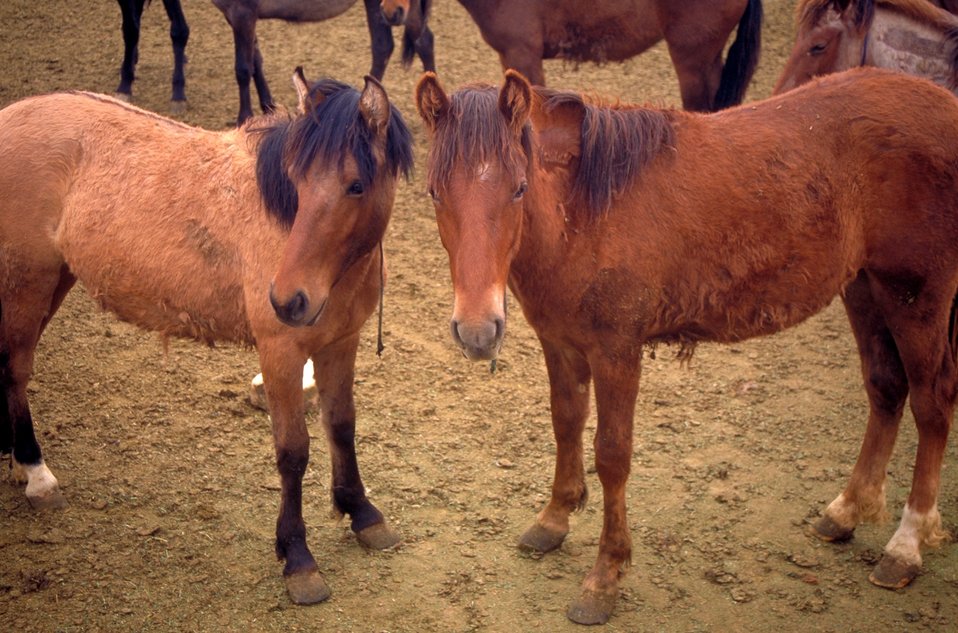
Holding pen near Vernal, Utah.